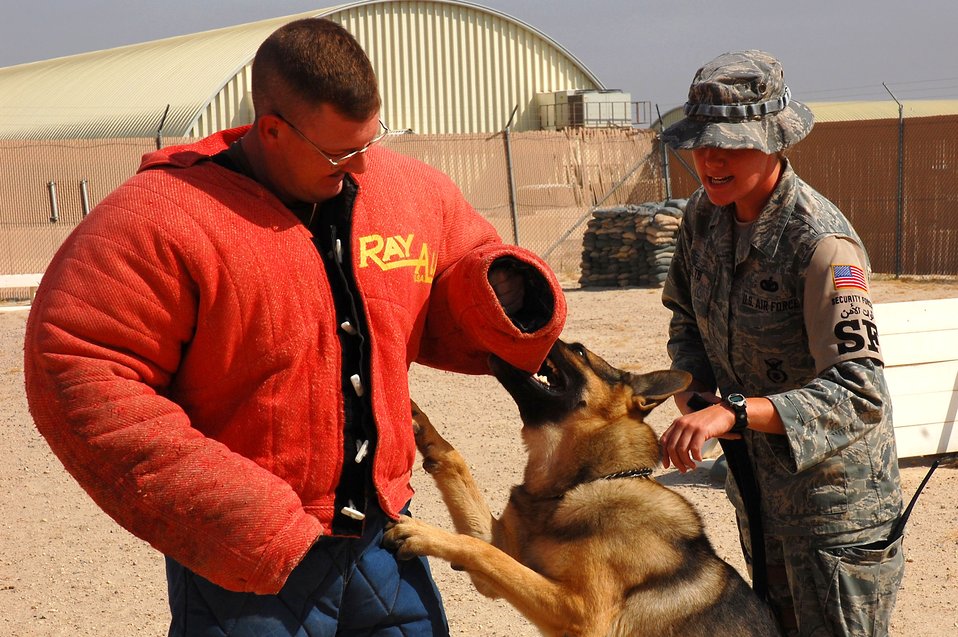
Working like a dog

Tech. Sgt. Brandon Webb tries to keep his balance as Bert latches onto the bite suit during controlled aggression training as his handler, Staff Sgt. Laura Felts, gives commands Sept. 19 at a deployed location in Southwest Asia. Sergeant Webb is the 386th Expeditionary Security Forces Squadron kennel master. Sergeant Felts is a 386th Expeditionary Security Forces Squadron military working dog handler, and Bert is a 386th ESFS military working dog. Military working dog teams are a force multiplier for security forces. Military working dogs are trained to respond to a hostile threat to either themselves or their partner, with or without a command.